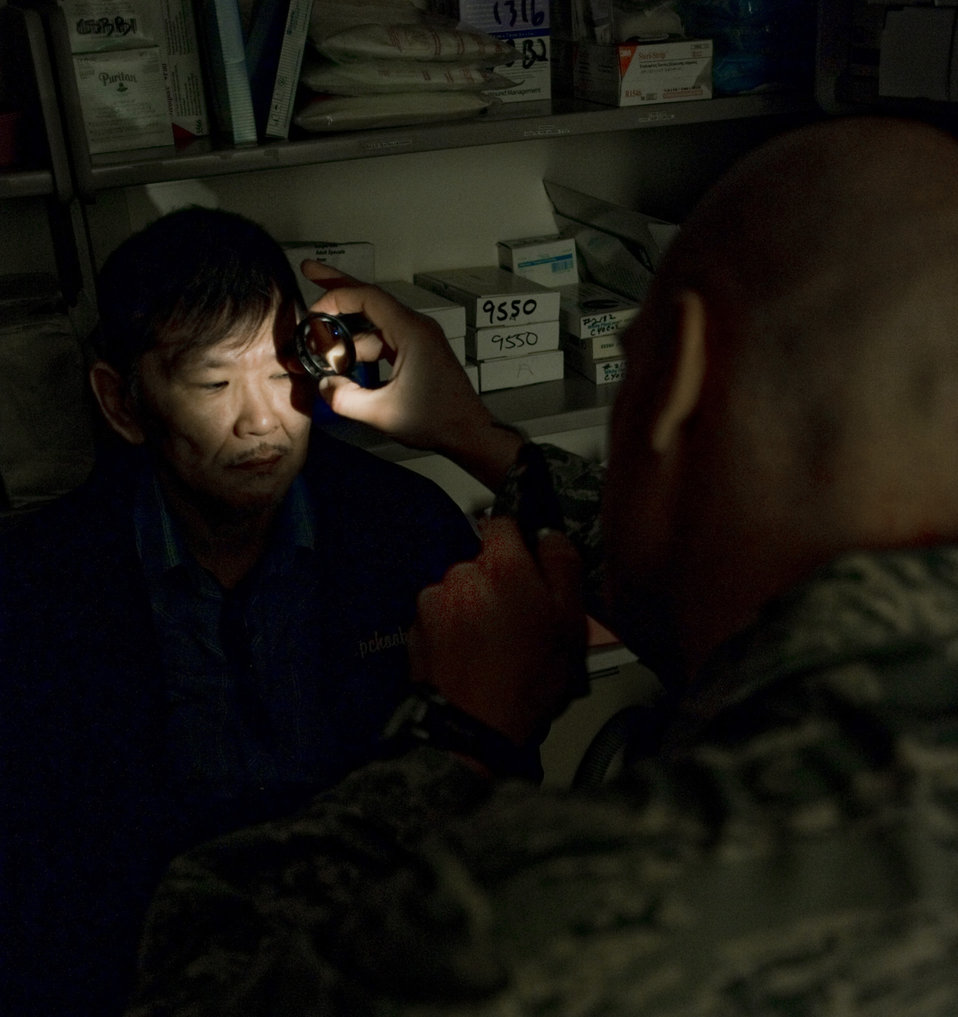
Operation Arctic Care visits Kwethluck village

Capt. Justin Sandholmes, an optometrist from MacDill Air Force Base, Fla., examines a patient's cornea for abnormalities March 10 at a health clinic in Kwethluk, Alaska. A joint military medical team deployed to Kwethluk, a small village in Western Alaska, in support of Operation Arctic Care 2009. This year's Navy-led mission had teams in 11 villages in Alaska's Yukon-Kuskokwim Delta region providing medical, dental and veterinary support at no cost to Alaskan natives.